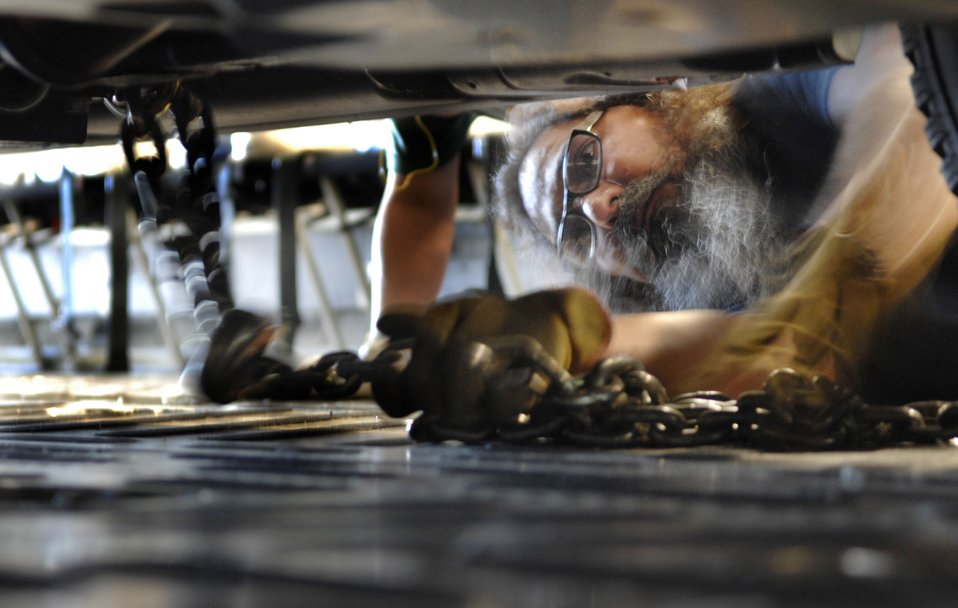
Globemaster delivers Army equipment to fight wildfires

Mike Gomez ties down an Army emergency response vehicle onto a C-17 Globemaster III Oct. 24 at San Antonio. Soldiers and the emergency response vehicle are being airlifted to California to help support personnel battling the wildfires. Mr. Gomez is an aircraft freight loader assigned to Kelly USA in San Antonio. The Army Soldiers and equipment are from U.S. Army North based at Fort Sam Houston in San Antonio.